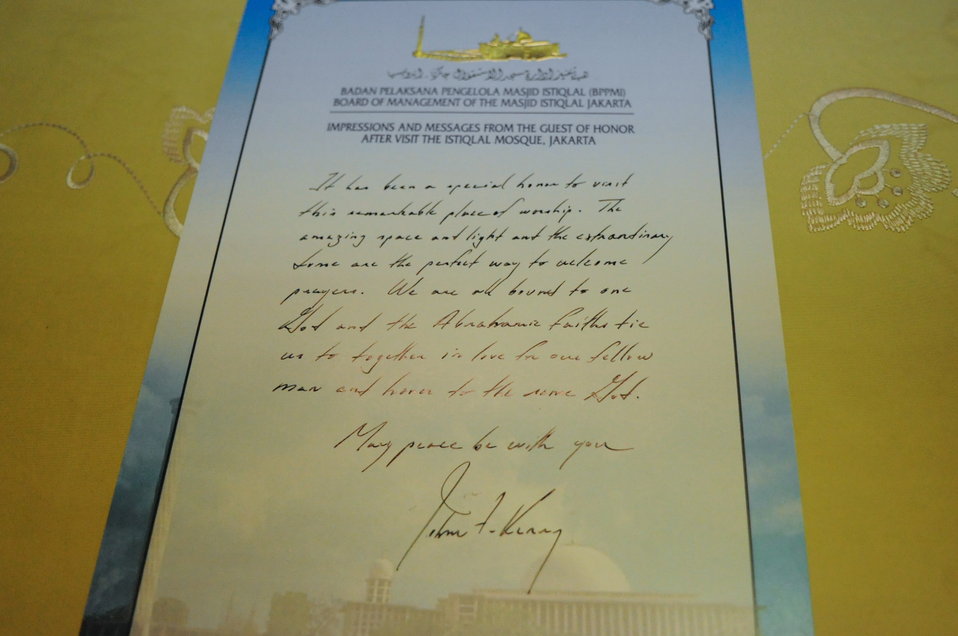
Message From Secretary Kerry After Visiting Istiqlal Mosque

The message written by U.S. Secretary of State John Kerry in the guest book of the Istiqlal Mosque in Jakarta, Indonesia, the largest in Southeast Asia, after he visited on February 16, 2014.